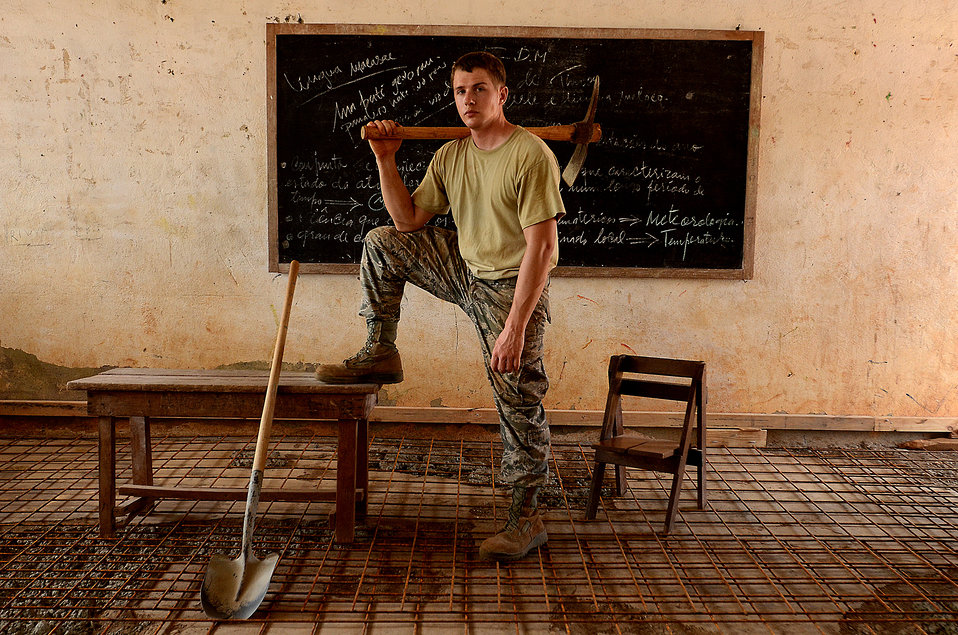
Back to school

During Operation Pacific Angel 11-02, Senior Airman Paul Head works on assessing and repairing a classroom at Tri-Loca Primary School Sept. 20, 2011, in Baucau, Timor-Leste. Pacific Angel is a joint humanitarian and civic-military operation. Head is a pavement specialist and construction equipment engineer with the 35th Civil Engineer Squadron.